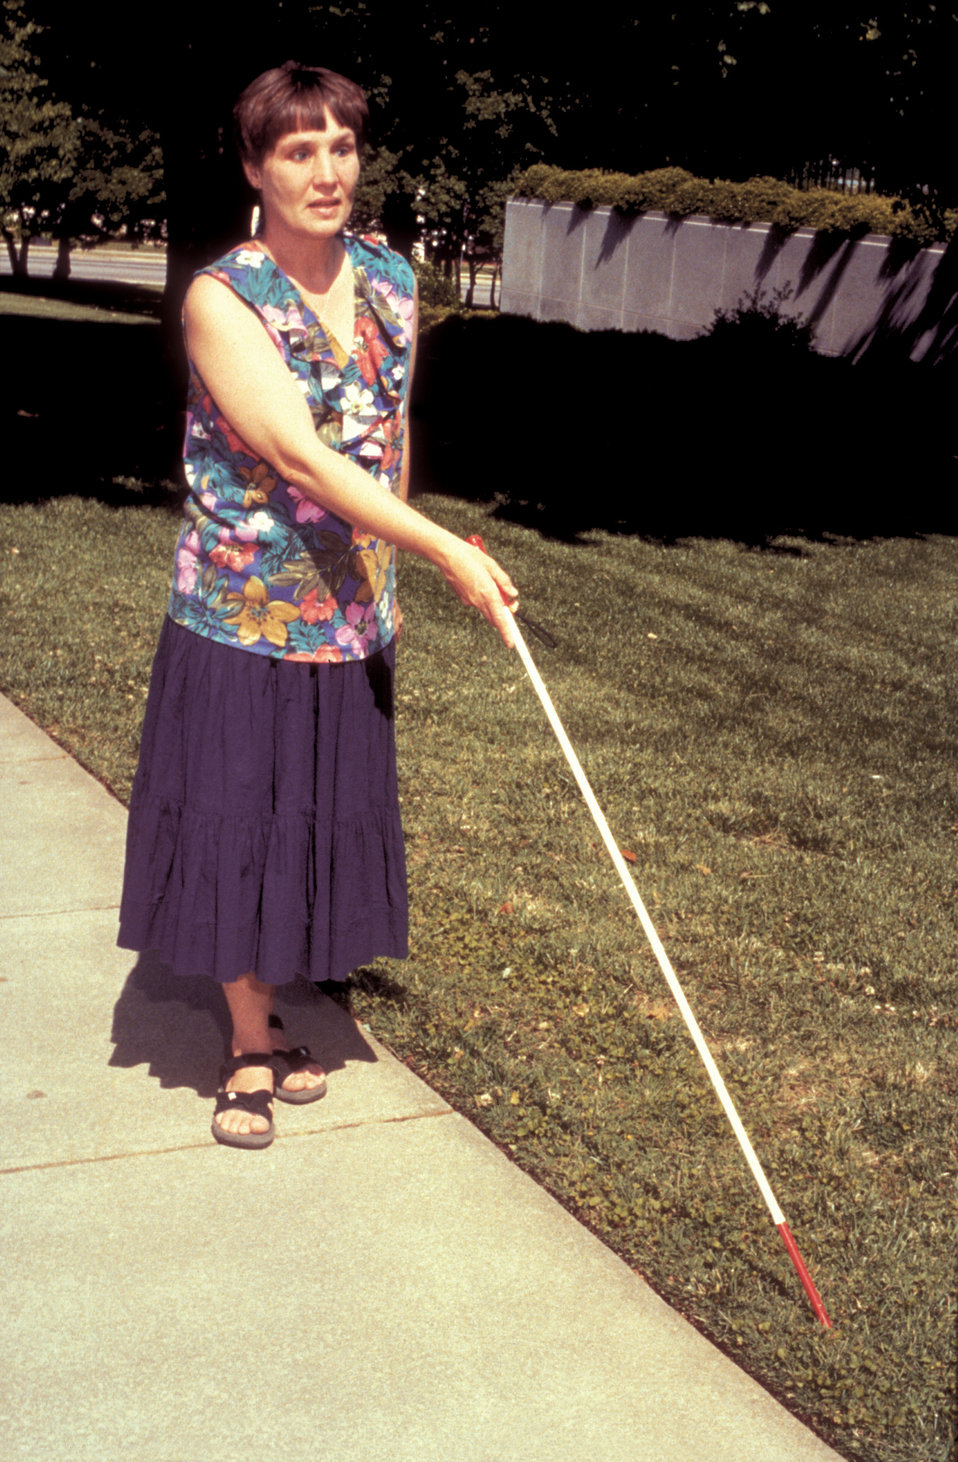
This visually-impaired woman was using a walking stick in order to 'extend her reach' in order to detect obstacles in her path. Using a 'sweeping' motion was able to forewarn her of objects, as well as changes in terrain, which in this case was the sidewalk surface transitioning into the adjacent grassy surface. You can see how taking into account impairments such as this makes the process of designing such publicly-accessible environmental surroundings challenging, but necessary. See PHIL# 9063 and 9064 for additional pictures of this person interacting with other environments while using her walking stick.